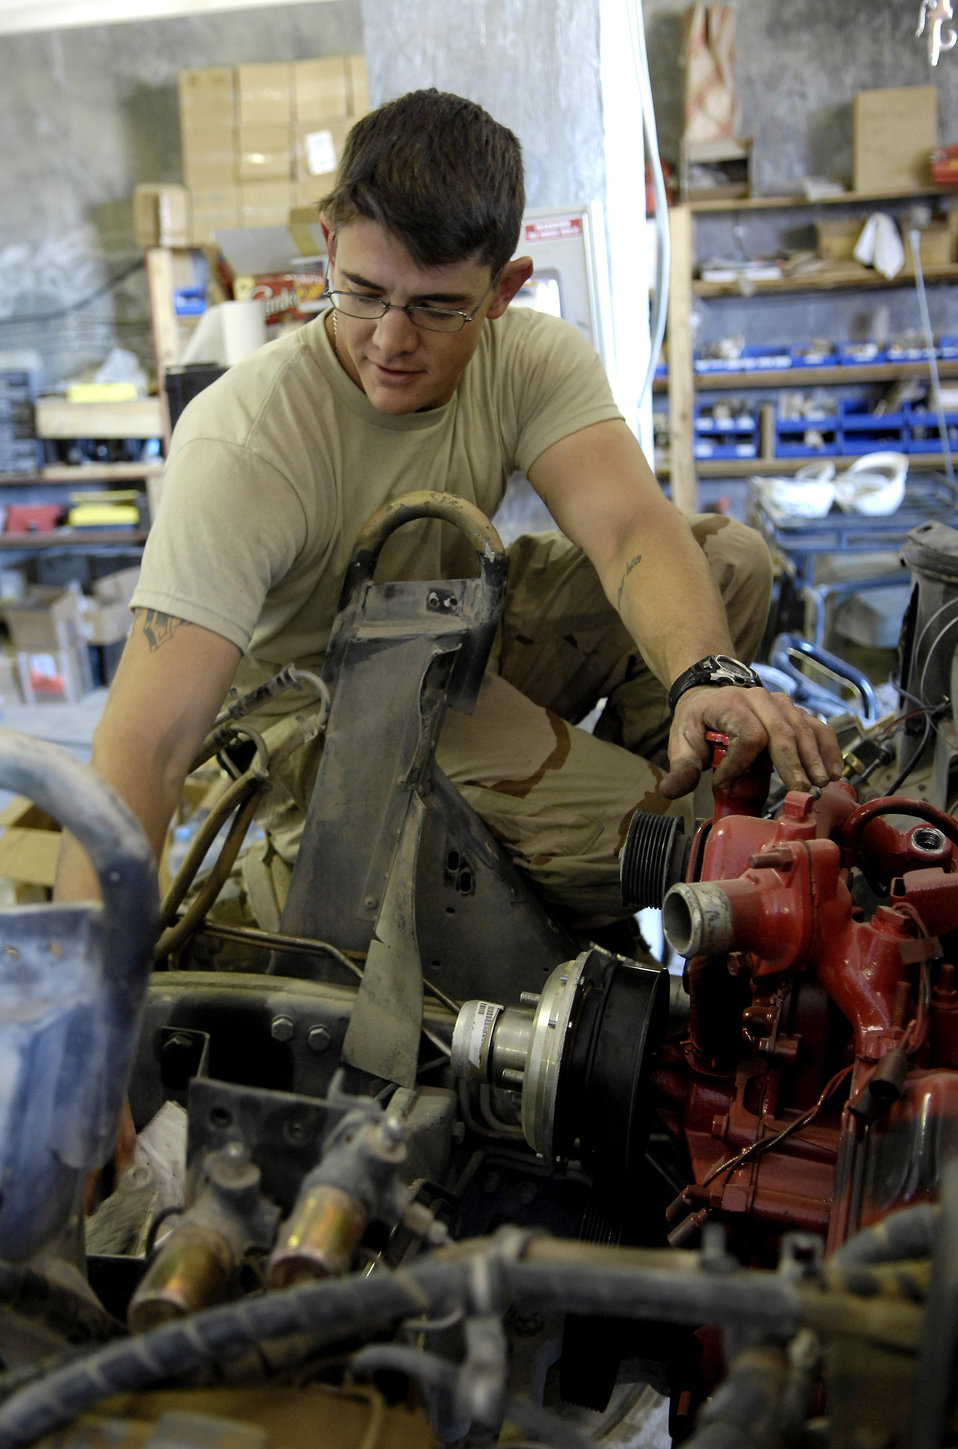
'In-lieu-of' Airmen keep Army rolling along

Tech. Sgt. Dave Albanese hooks up the lift pump on a Humvee Nov. 1 at forward operating base Lagman, in Afghanistan. Sergeant Albanese is a vehicle maintenance technician filling a 365-day Army 'in-lieu-of' tasking. Sergeant Albanese is deployed from Seymour Johnson Air Force Base, NC.